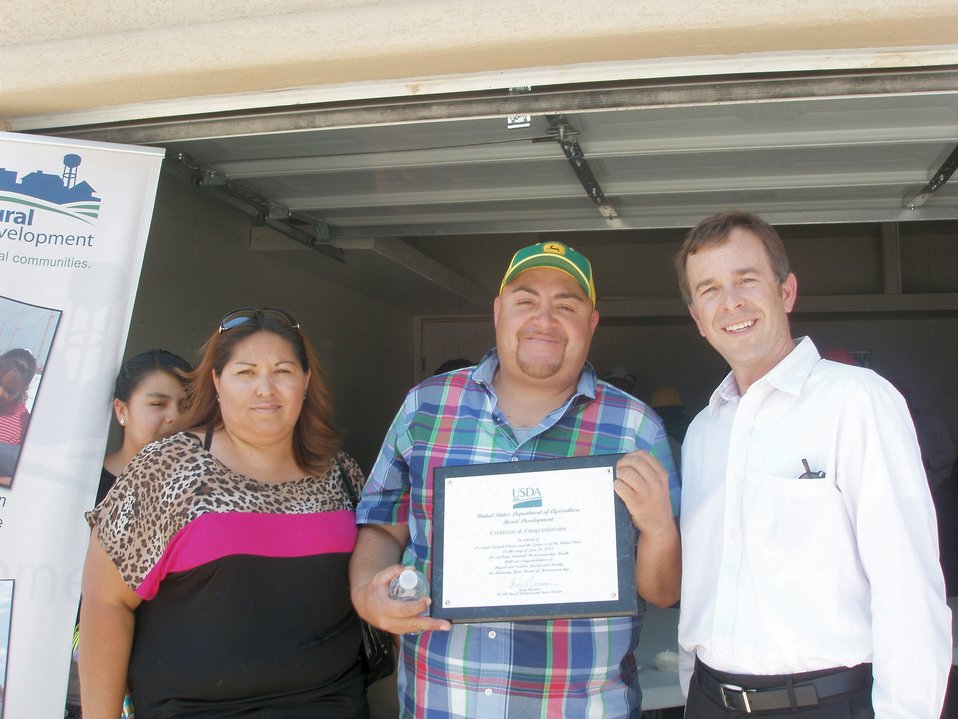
Sunland Park Homeownership Event-01

U.S. Department of Agriculture (USDA) Rural Development (RD) New Mexico State Director Terry Brunner (r) presents a certificate of congratulations to Sandra and Miguel Duarte. The presentation was made during National Homeownership Month event in Sunland Park to honor the Durate family for becoming new homeowners.